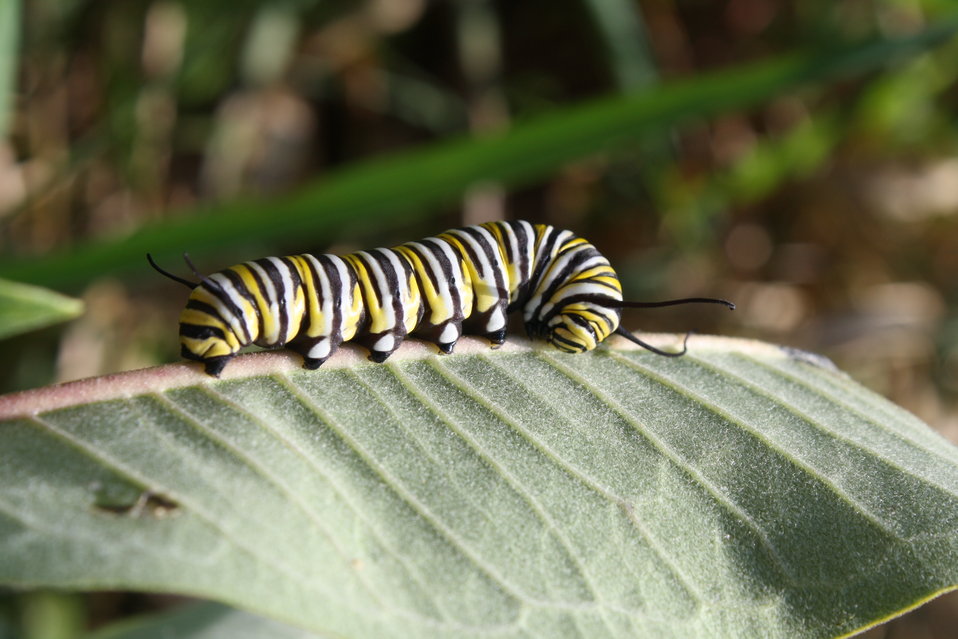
Photo of the Week - Monarch caterpillar at the Northeast Regional Office, MA

Photo of the Week - 09/14/2010

Monarch caterpillar at the Northeast Regional Office in Hadley, Massachusetts.